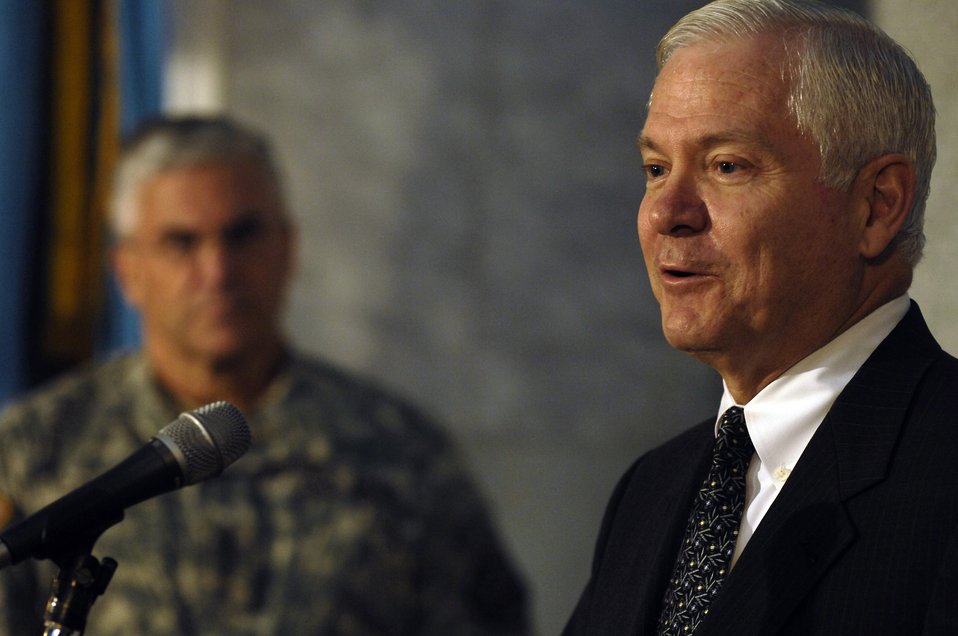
Initial visit

Secretary of Defense Robert M. Gates conducts a press conference in Baghdad, Iraq, Dec. 20, as Army Gen. George W. Casey Jr., commander of Multi-National Force - Iraq, looks on.